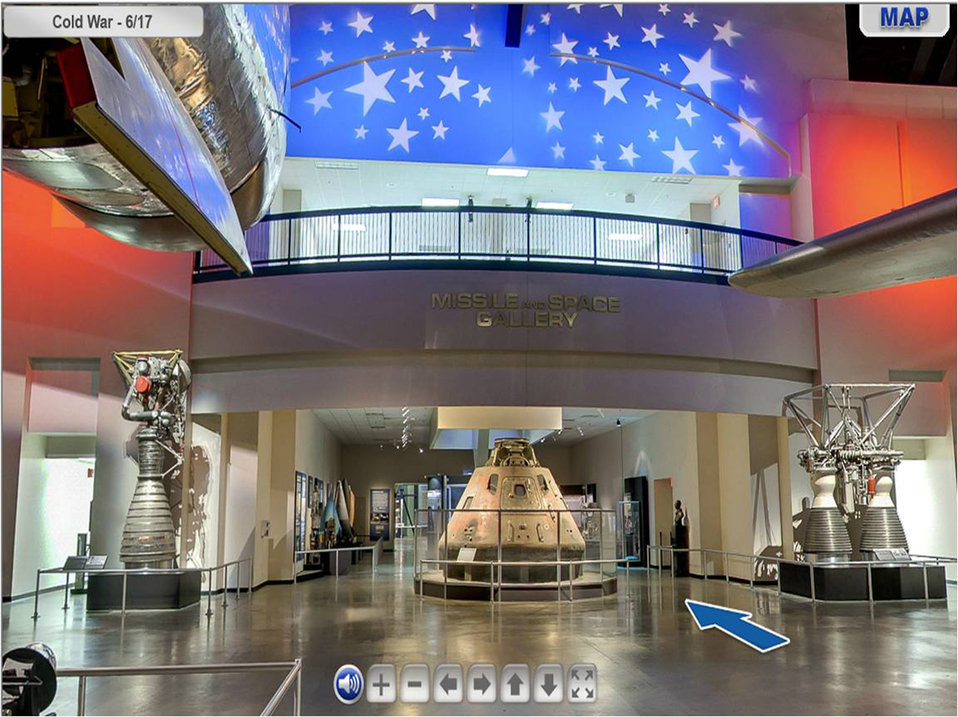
Air Force Museum offers virtual tour

This is a screenshot showing the Apollo 15 Command Module at the entrance of the Missile and Space Gallery from the National Museum of the U.S. Air Force's Virtual Tour website.